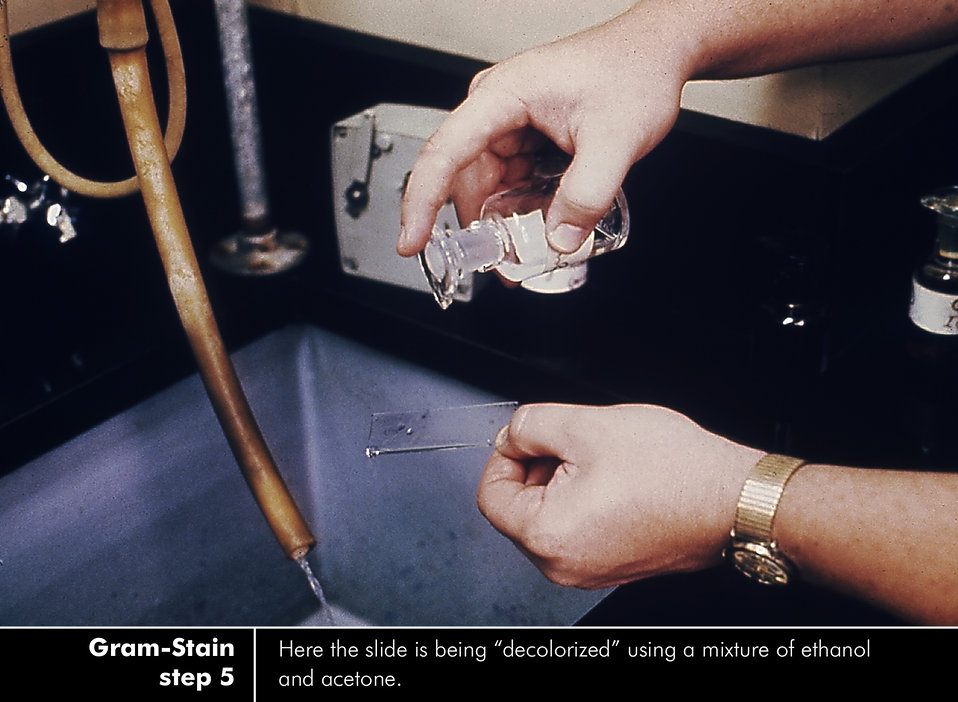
Gram-stain procedure - Step 5 of 7. See PHIL ID#'s: 3433, 3426, 3427, 3435, 3437, 3436, 3434 for the complete set.